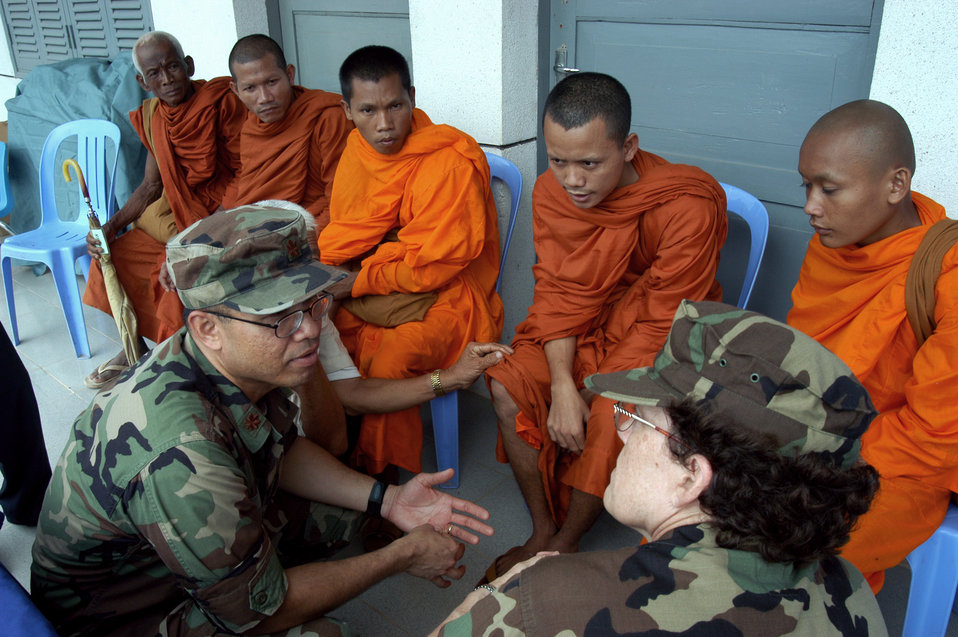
Medics assist in Cambodia

KEP, Cambodia -- Maj. Vira Em translates a monk's symptoms for Navy Capt. Faye Pyles on May 17. They are part of a 20-person blast resuscitation and victim assistance team that arrived here for a two-week humanitarian mission. Major Em is an active-duty bioenvironmental engineering technical adviser assigned to Air National Guard headquarters at Andrews Air Force Base, Md. Captain Pyles is a pediatric nurse practitioner assigned to the Portsmouth Naval Hospital, Va.